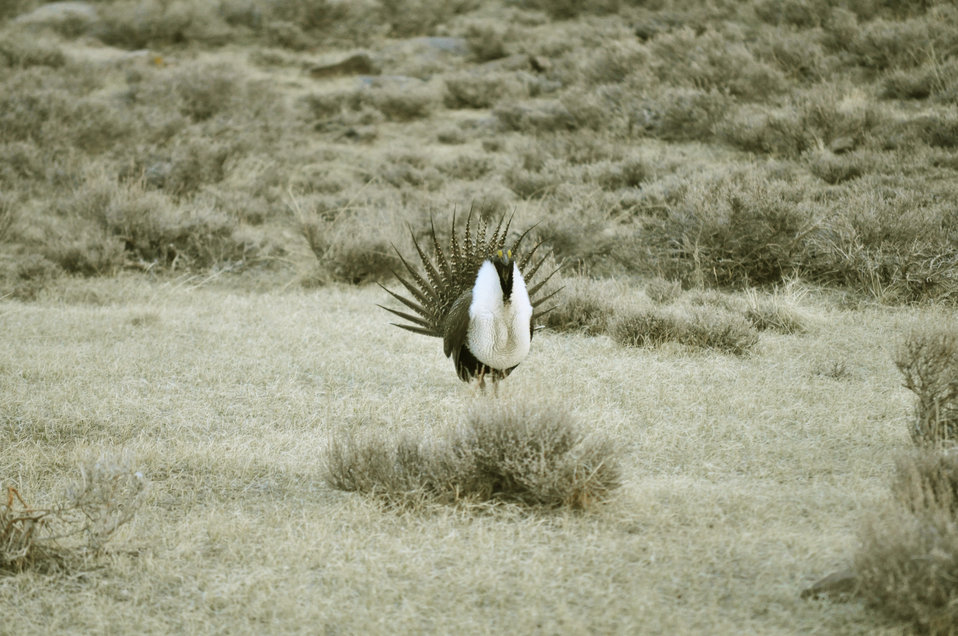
Male greater sage-grouse struts at lek (dancing or mating grounds) to attract females near Bodie, California.